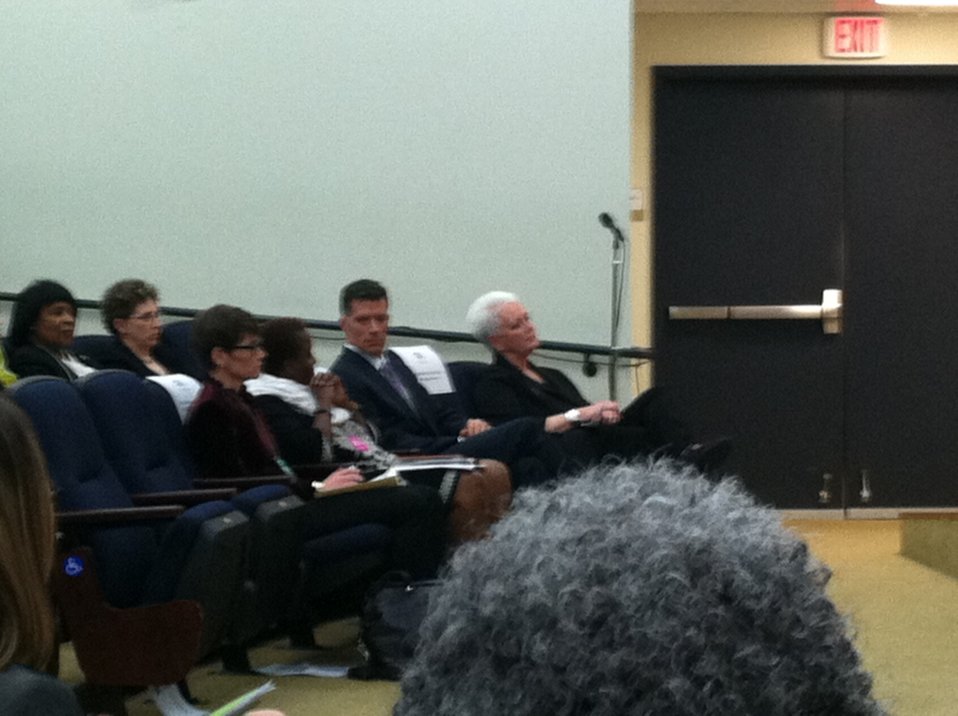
Grant and Gayle Smith, NSS, White House